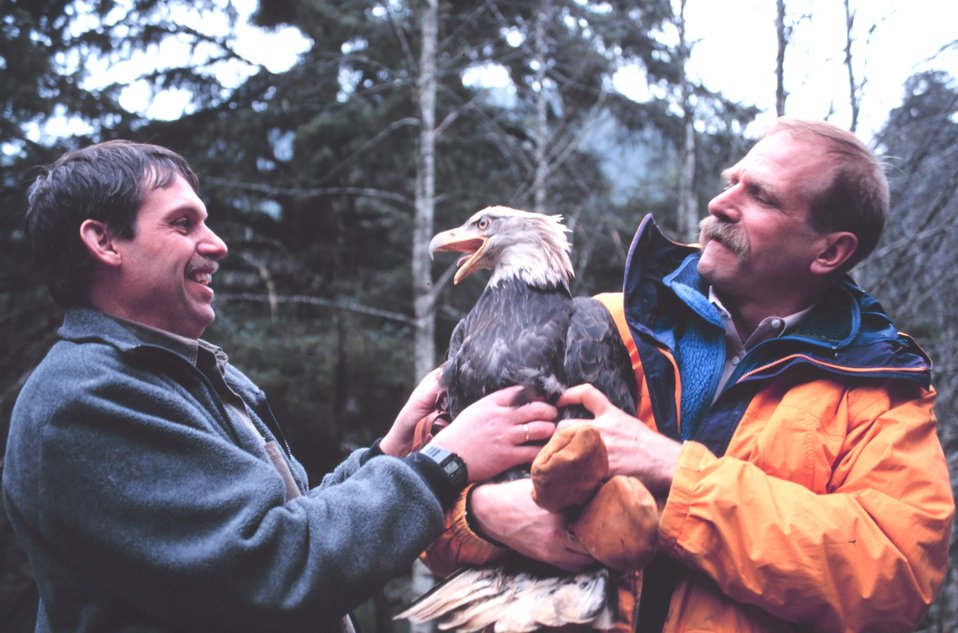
Rescuing waterfowl. Note chick in hand.